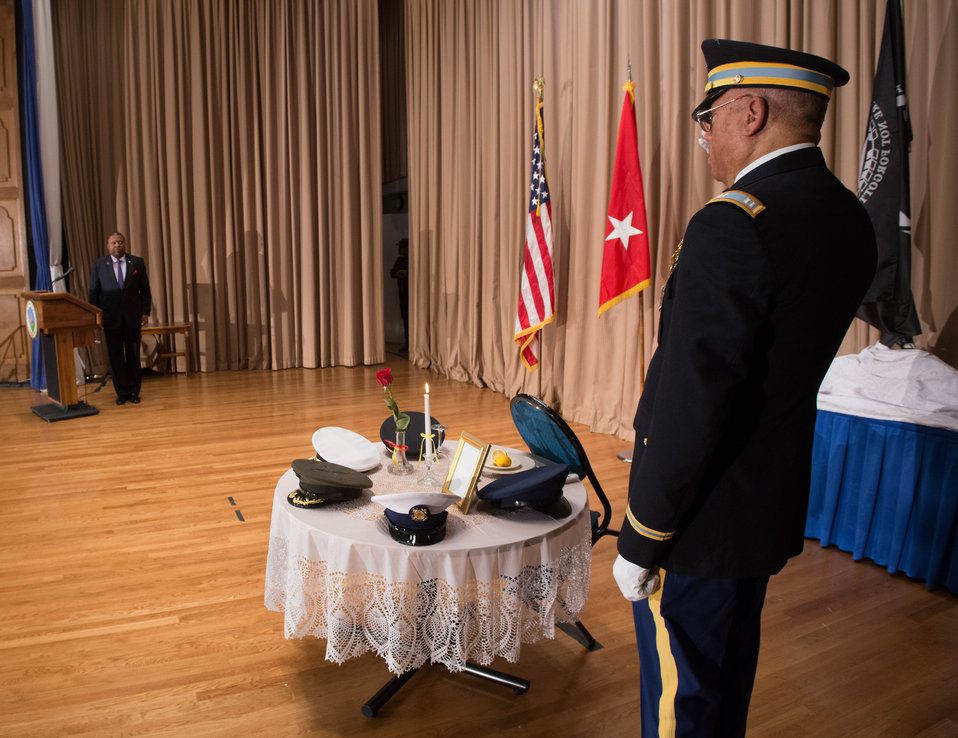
U.S. Department of Agriculture (USDA) Farm Services Agency (FSA) Office of Civil Rights U.S. Army Captain (retired) and Vietnam veteran Andrew Malloy salutes the covers of the major uniformed services, during the Prisoner of War (POW)/Missing in Action (MIA) Honors Ceremony, of the 2013 U.S. Department of Agriculture (USDA) Veterans’ Day Observance, whose theme is “VALOR, COURAGE, SACRIFICE – HONORING ALL WHO SERVED,” in Washington, DC, on Wednesday, November 20, 2013.